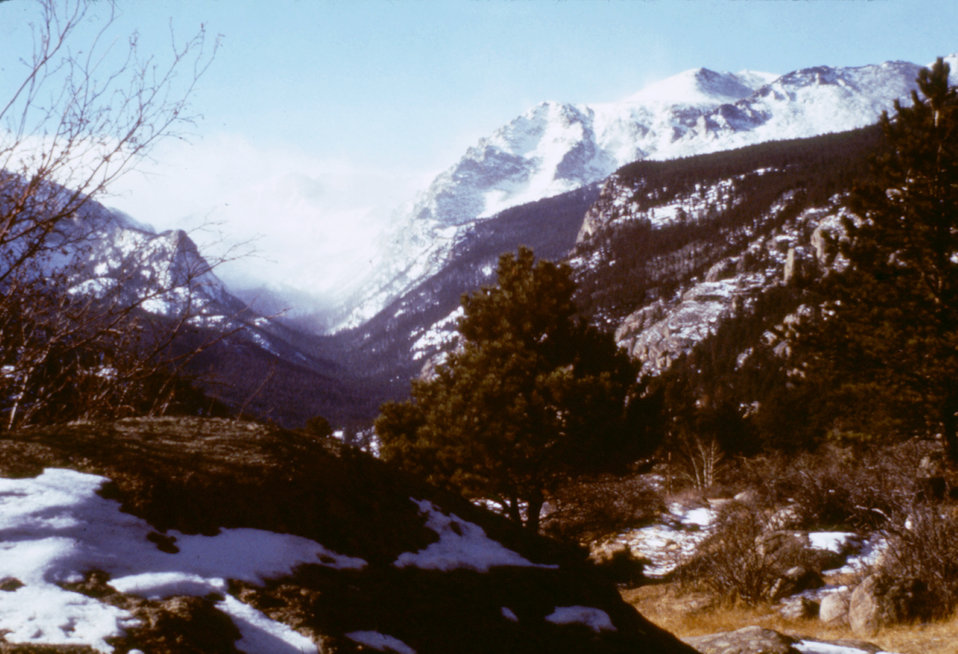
This is an image of Estes Park, Colorado, the site of a 1975 'sylvatic plague', and 'Colorado tick fever study'.